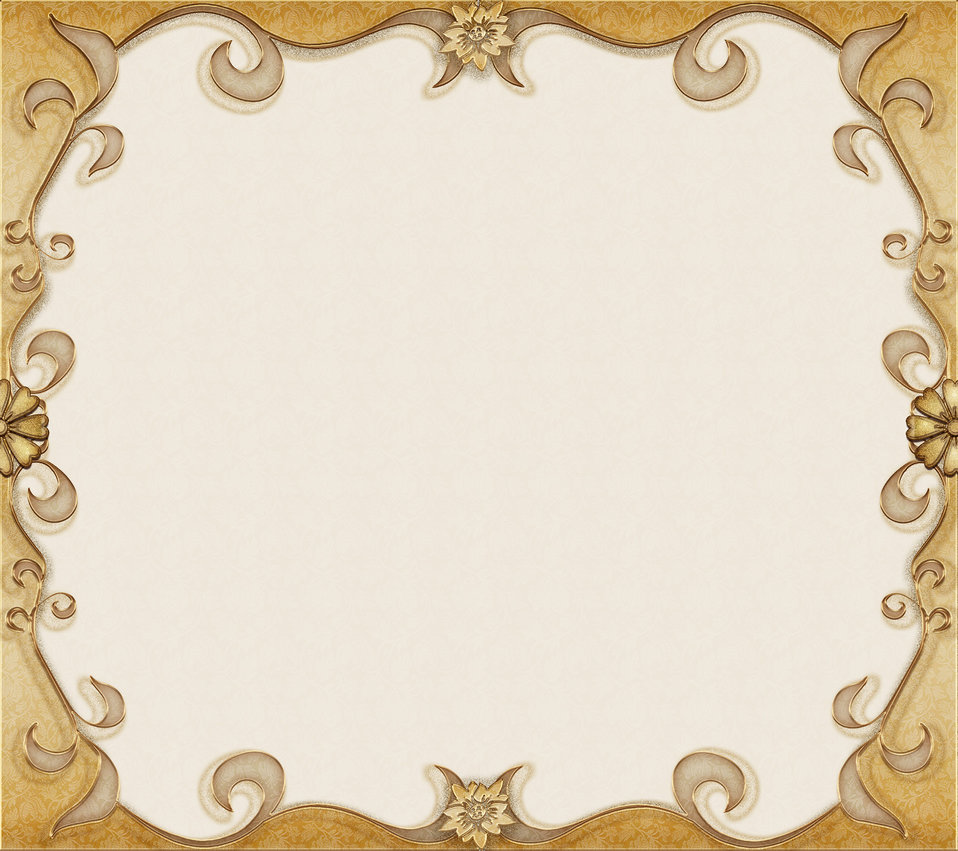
Gold frame

Design golden frame for photos.